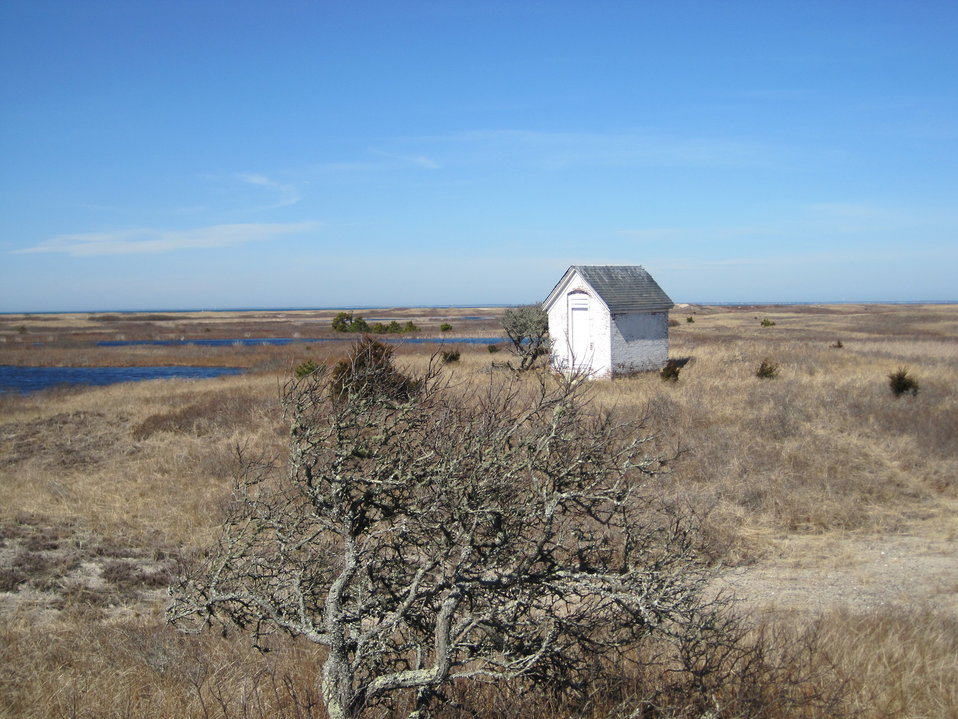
South Monomoy Island

View from the front porch of the light keeper's house.

Credit: Keith Shannon/USFWS

Monomoy National Wildlife Refuge is part of the Eastern Massachusetts National Wildlife Refuge Complex.